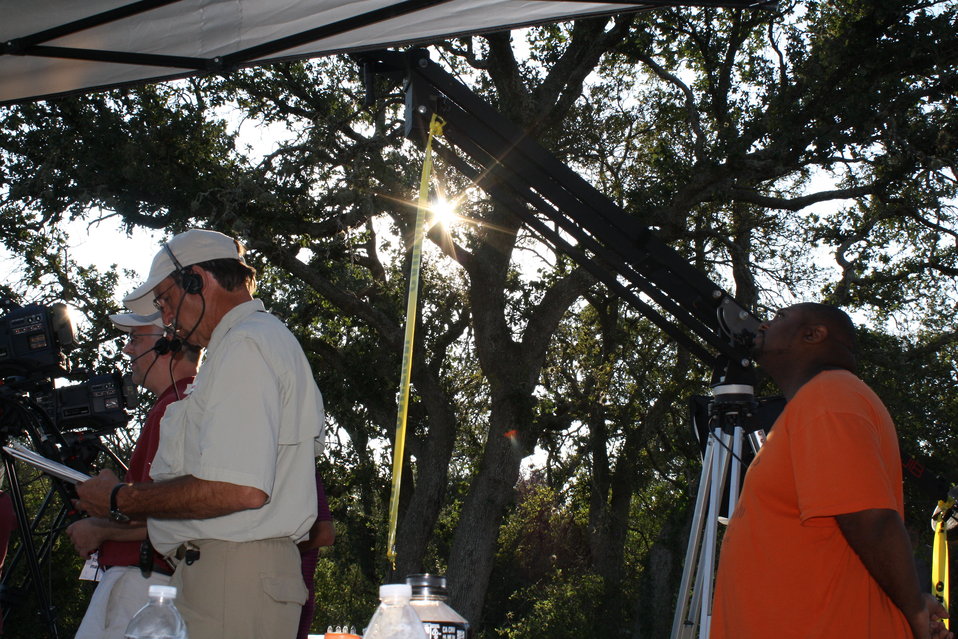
Filming BatsLIVE